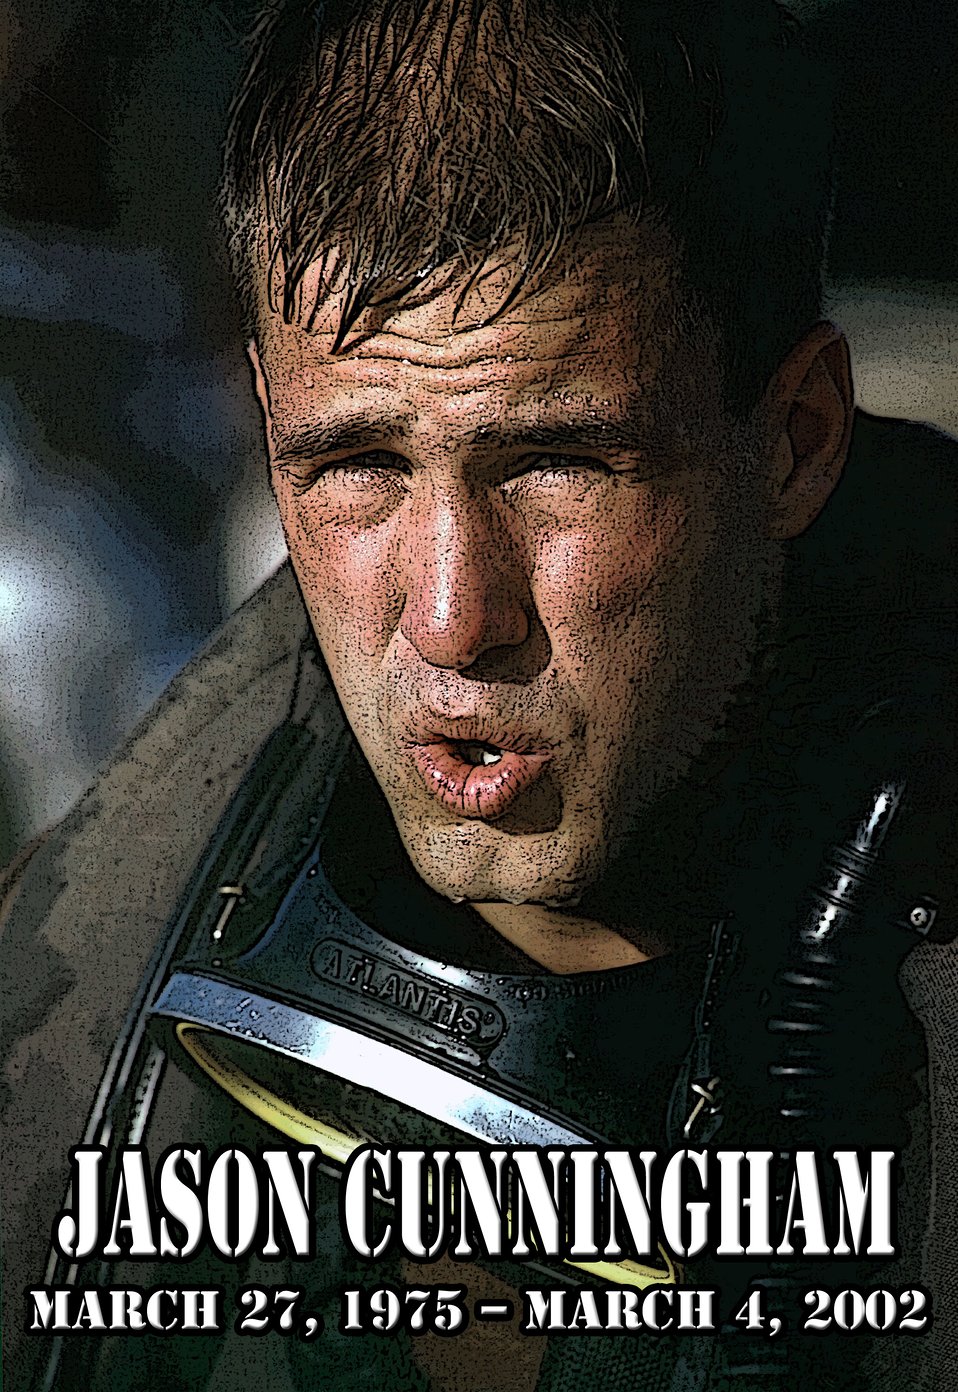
Bagram Airfield service members honor AF hero